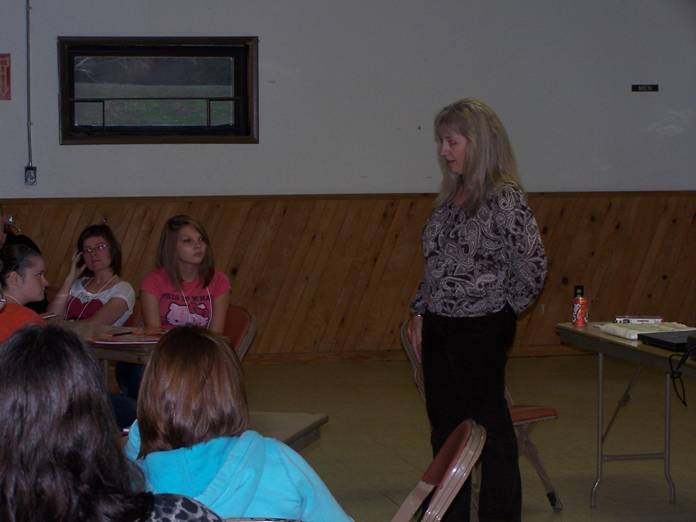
LAUNCH inc. Event in Jackson, OH

Dr. Natasha Slesnick, NIDA Grantee during NDFW and the event hosted by LAUNCH inc. in Jackson, OH